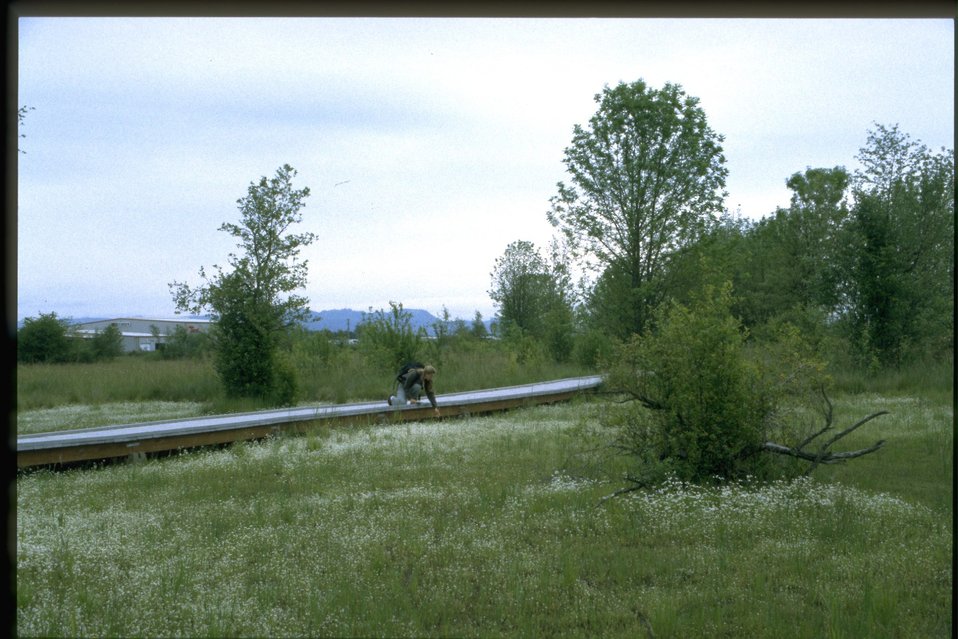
Far shot of Plagiobothrys figurantus.